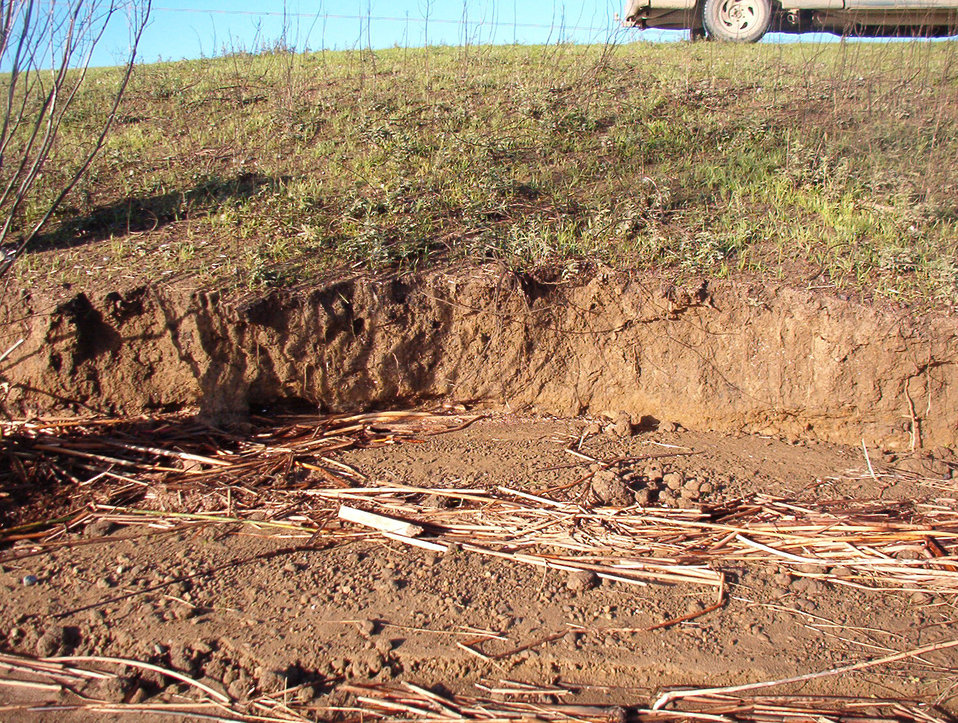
Levee erosion near Dixon, CA

Levee erosion near Dixon, Calif., shown Jan. 9, 2006, following high river flows from heavy winter storms. The U.S. Army Corps of Engineers Sacramento District completed emergency erosion repairs between 2007 and 2009.